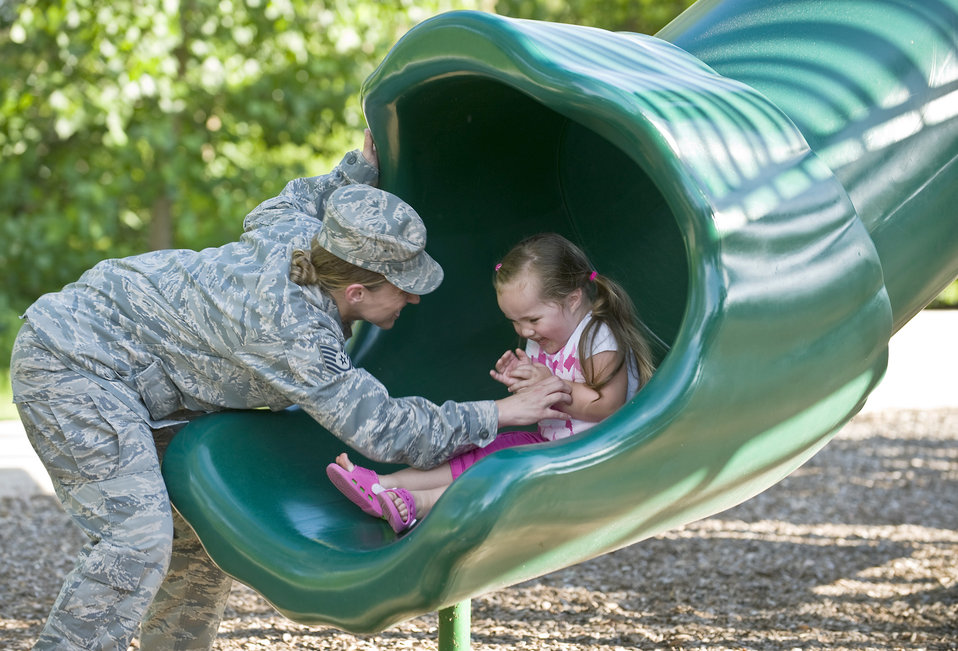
Know before you go

Tech. Sgt. Christina Gamez catches her daughter, Ava, while sliding at their neighborhood park.